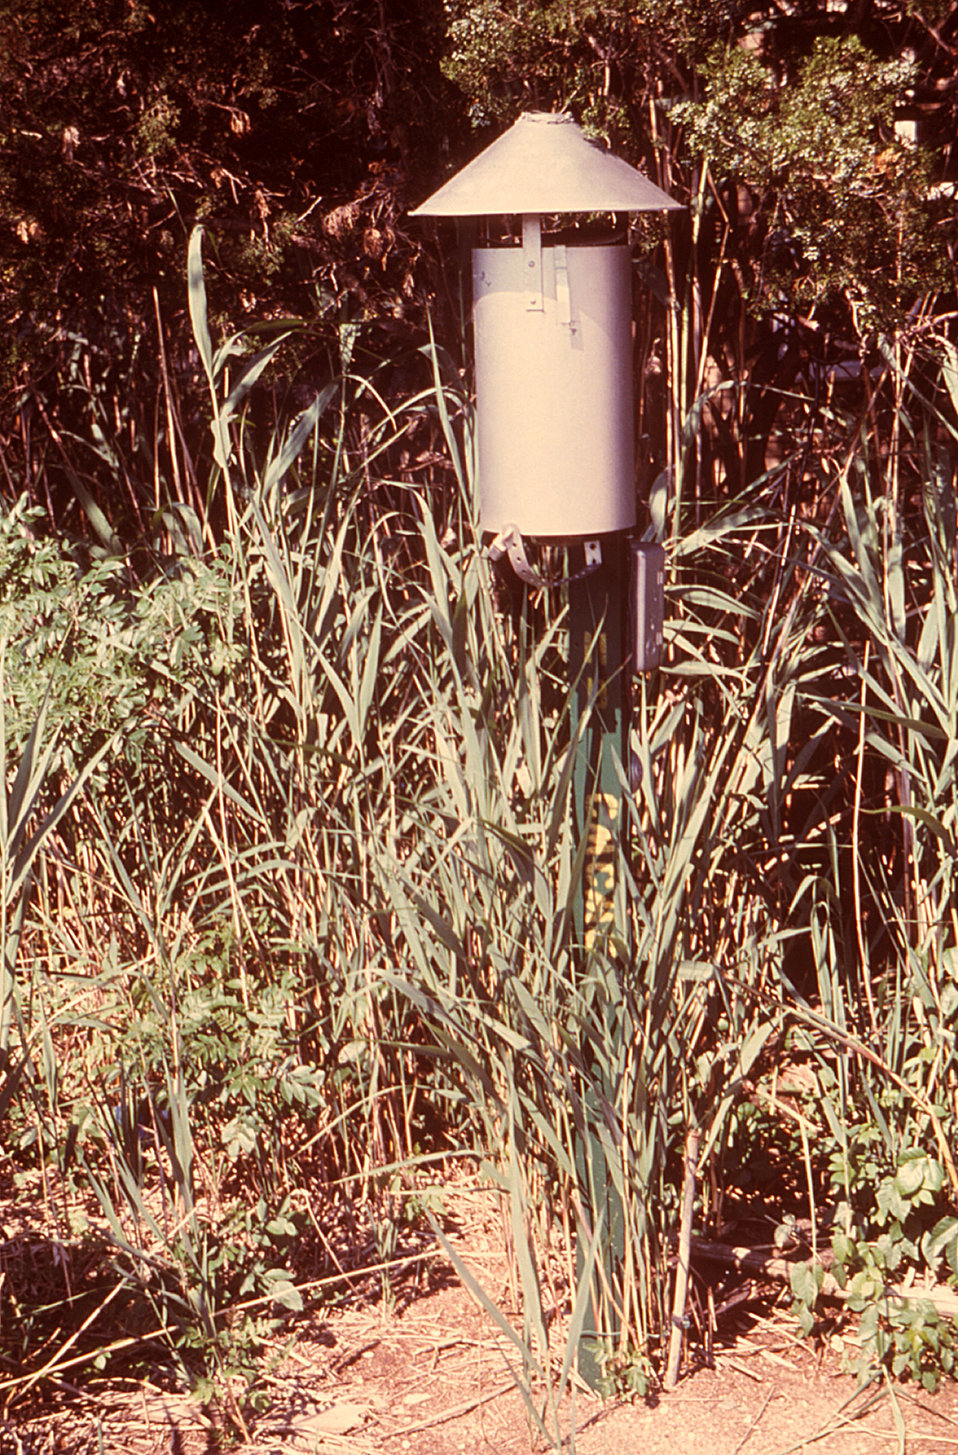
This 1980 photograph depicted a New Jersey-type light trap that was being used for trapping mosquitoes in Cape May, New Jersey during a field study to determine the presence of vector populations of that region.